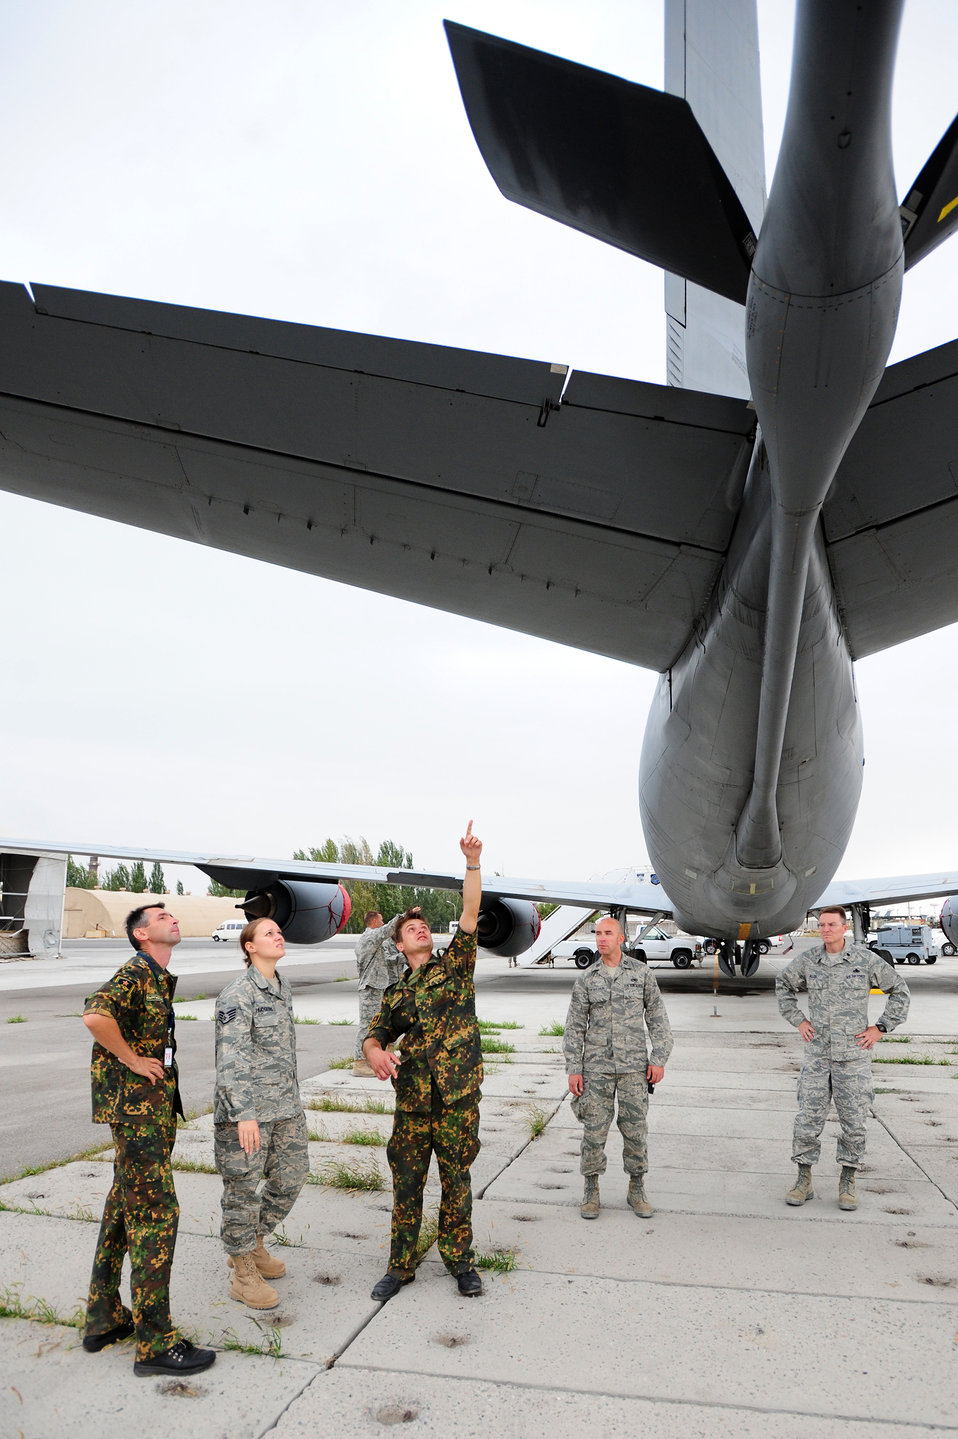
Kyrgyz ministry of defense team shadows Airmen, learns expeditionary maintenance

Kyrgyzstan ministry of defense officials and 376th Expeditionary Aircraft Maintenance Squadron Airmen examine the refueling boom on a KC-135 Stratotanker Aug. 25, 2009 during a visit to the Transit Center at Manas, Kyrgyzstan. The Kyrgyz ministry of defense got a firsthand look at maintenance facilities and operations while touring the Transit Center.